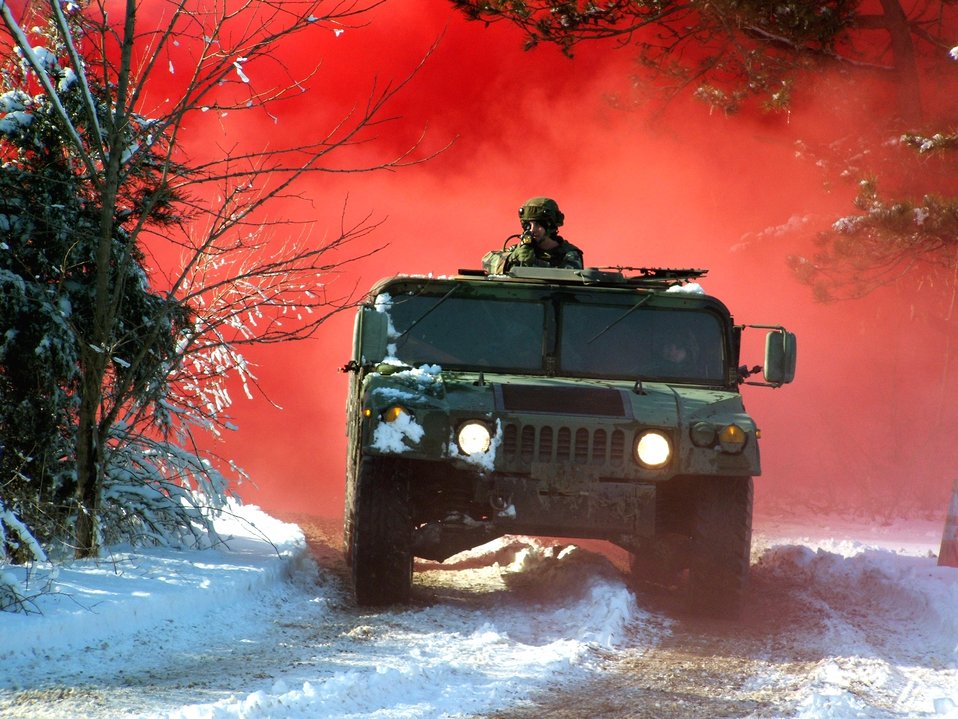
Convoy training

FORT DIX, N.J. (AFPN) -- Airmen respond to an